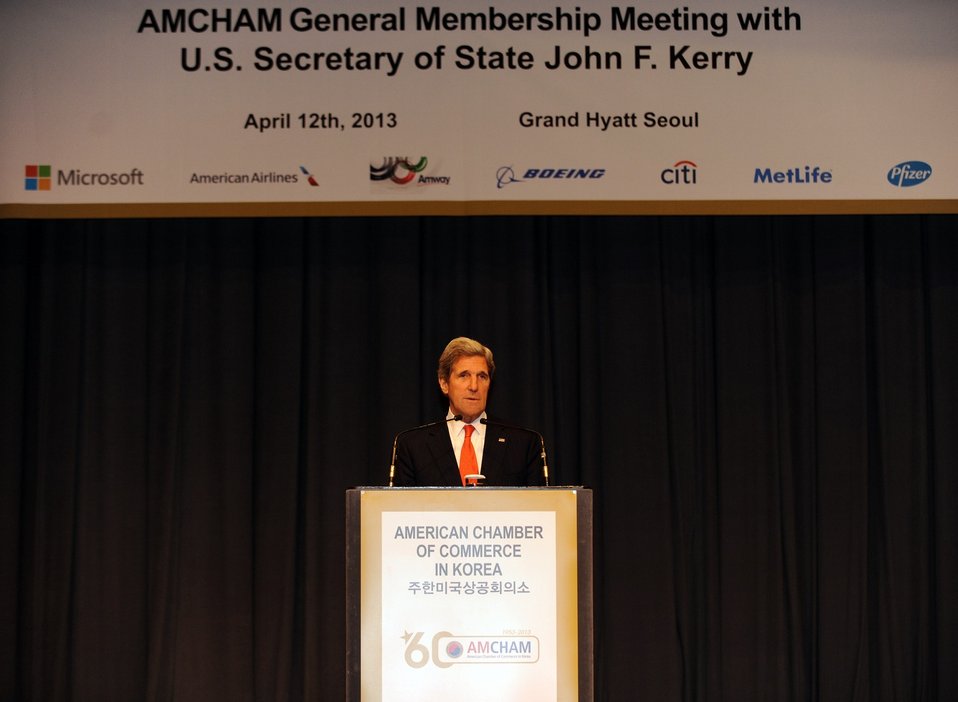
Secretary Kerry Speaks to AMCHAM Members in South Korea

U.S. Secretary of State John Kerry delivers remarks at the AMCHAM General Membership Meeting in Seoul, South Korea, on April 12, 2013.